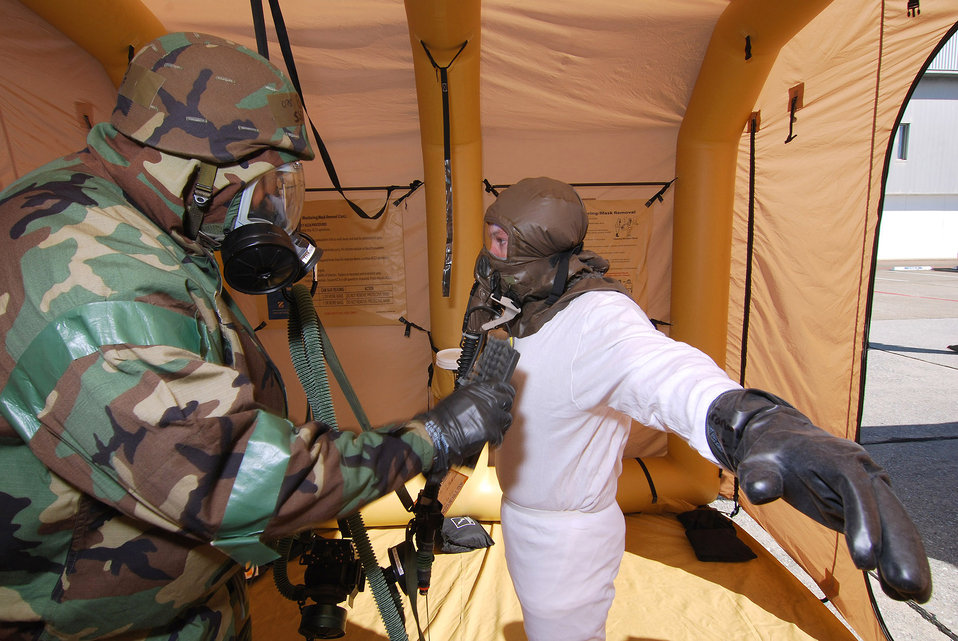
Aircrew Decontamination Training

Staff Sgt. Demetrius Brown (left) simulates using a chemical detection device on 1st Lt. Patrick Croasdale during decontamination training Feb. 6, 2011, at Dobbins Air Reserve Base, Ga. Sergeant Brown is an aircrew flight equipment technician. Lieutenant Croasdale is a 700th Airlift Squadron pilot.